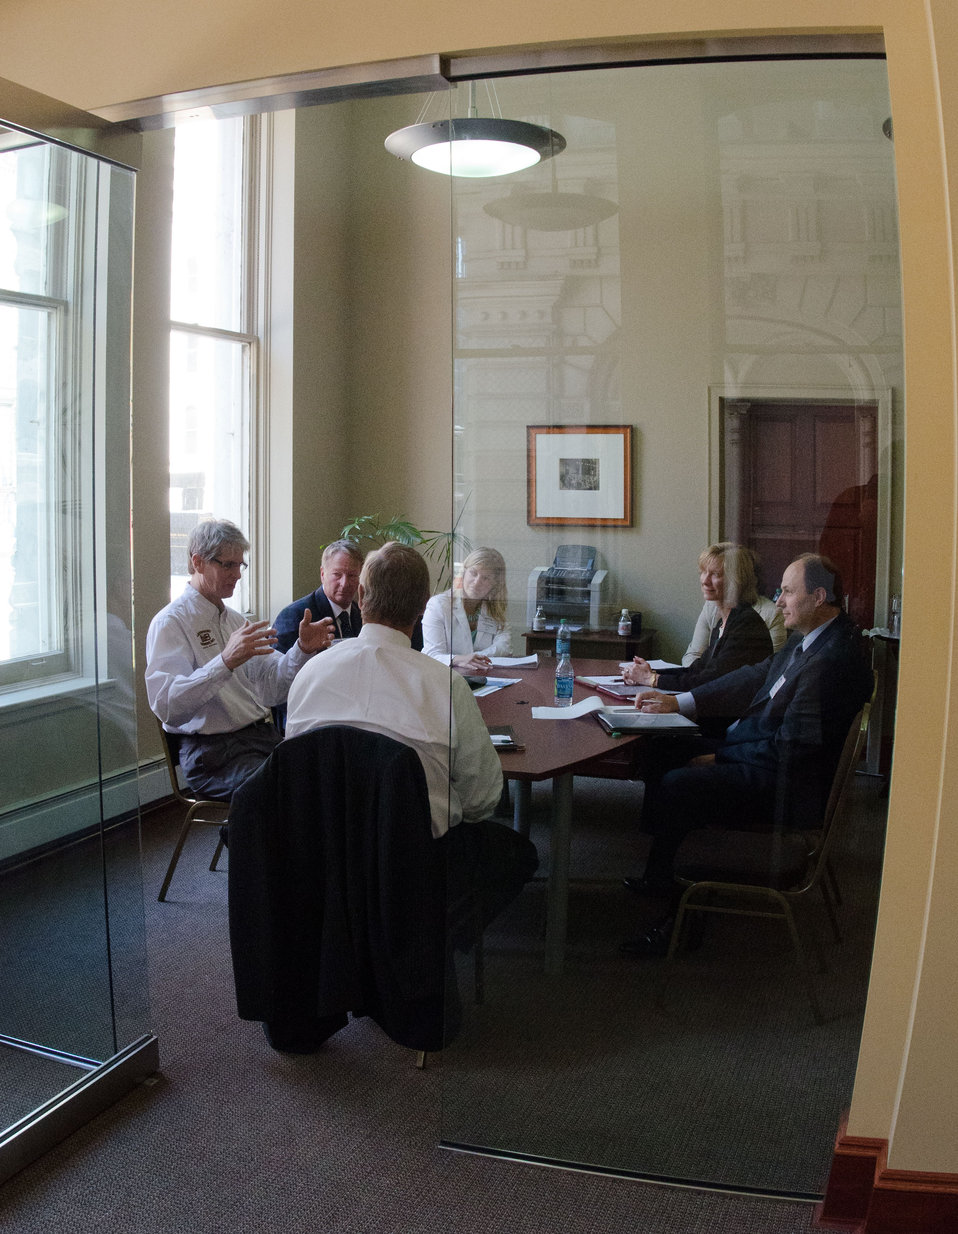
Agriculture Secretary Tom Vilsack meets with NEI participating companies after speaking at the National Export Initiative (NEI) Small Business Tour in Milwaukee, WI, on Wednesday, August 3, 2011. An important goal of the NEI is to provide additional assistance to small and medium-sized businesses, which are major drivers of job creation. The NEI is assisting small and medium-sized businesses win more foreign government contracts, find buyers worldwide, participate in more trade missions and trade shows, receive more export financing, and learn new ways to sell products and services overseas.